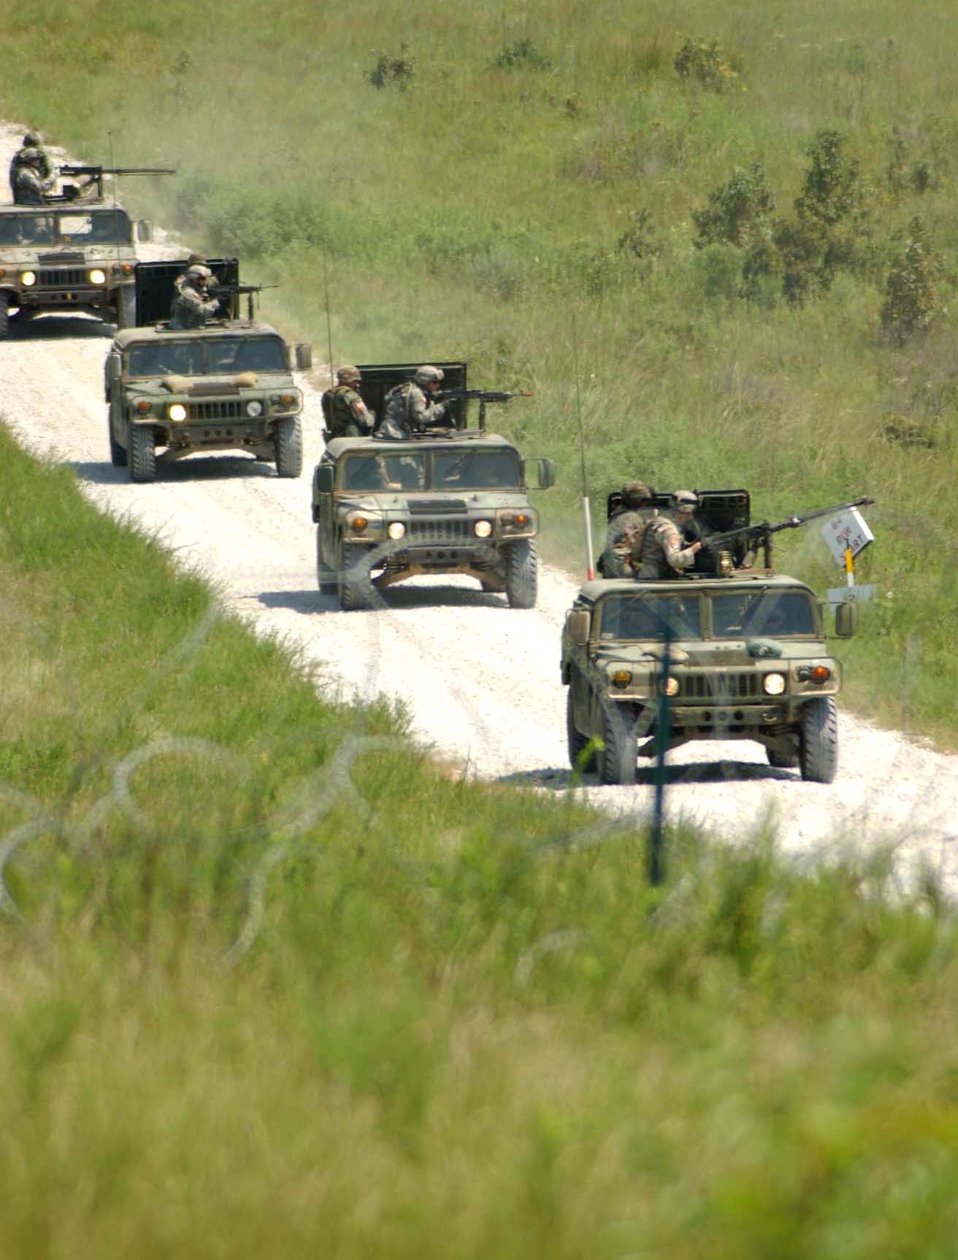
Pre-deployment training

A convoy of Airmen make their way down a makeshift road during pre-deployment training at Camp Shelby, Miss. Camp Shelby is one of several Army installations providing training to servicemembers preparing to deploy to Southwest Asia.